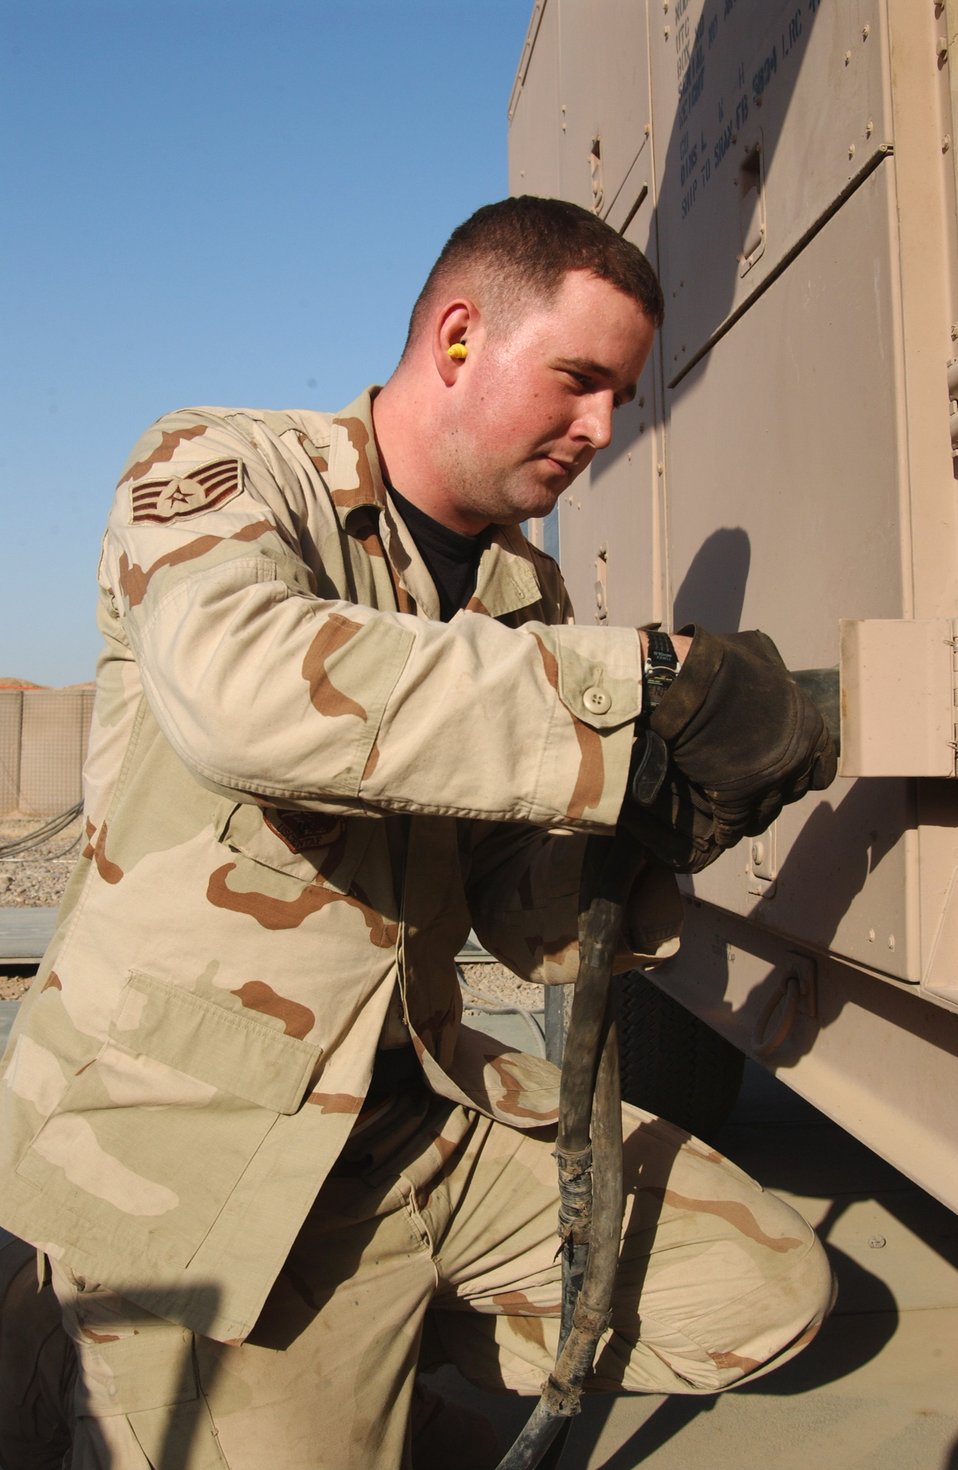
How to catch a falcon by the tail

Staff Sgt. Kristopher Oyen checks one of the four generators that supply electricity to the mobile aircraft arresting system July 26 at Balad Air Base, Iraq. He is assigned to the 332nd Air Expeditionary Civil Engineer Squadron.